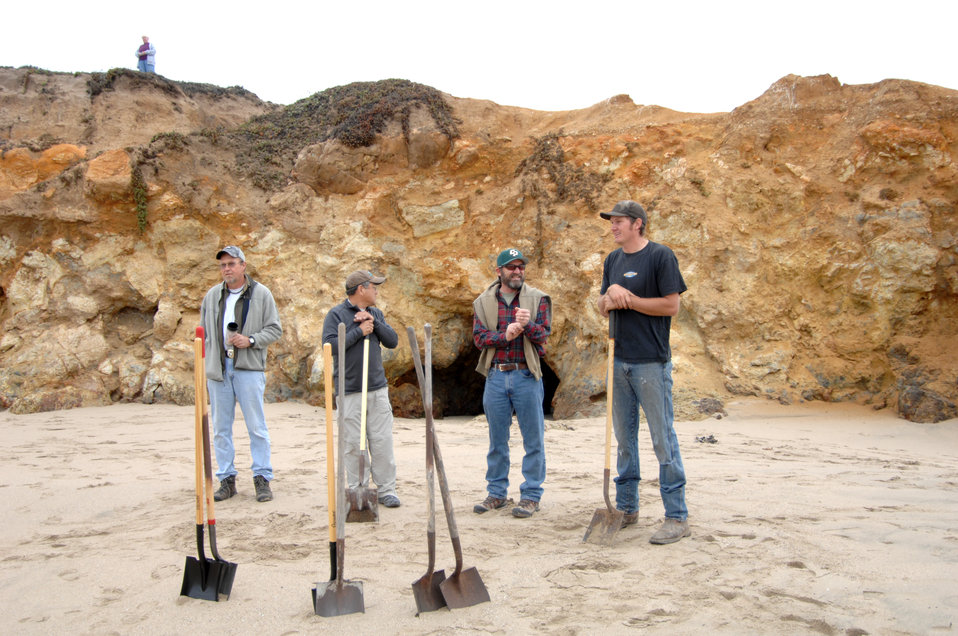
Native Sons of the Golden West